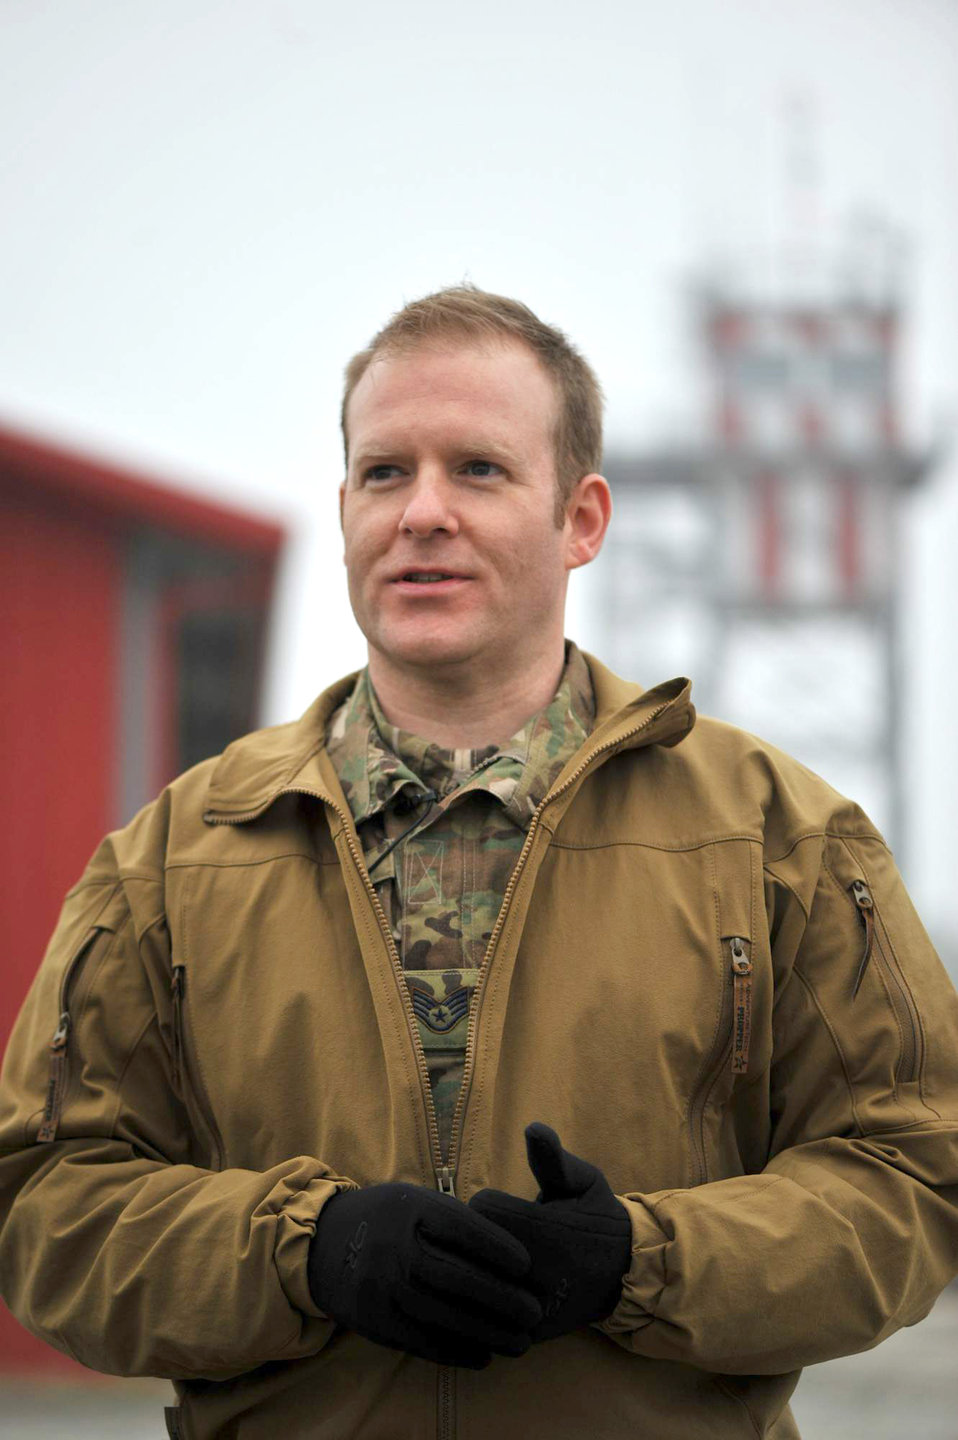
TACP Airmen hone skills

Staff Sgt. Kenny Walker explains his duties as a joint terminal attack controller Feb. 1, 2011, during a National Guard Bureau joint quarterly training exercise at Camp Townsend, Ga. Sergeant Walker is based out of Camp Murray, Wash.